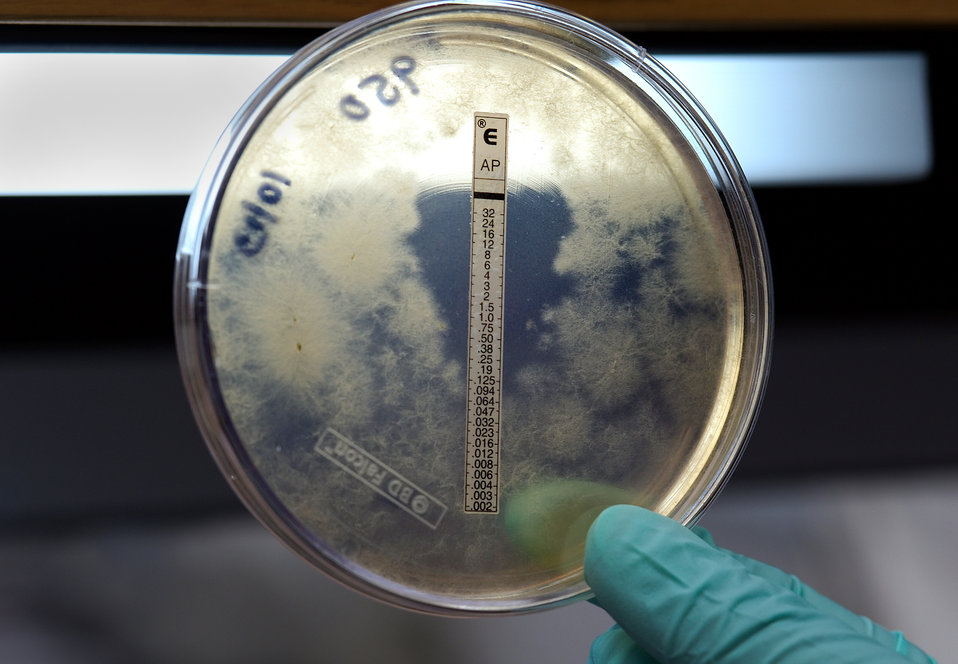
Captured during the Centers for Disease Control and Prevention's (CDC) multistate meningitis outbreak investigation, this plate revealed the results of a susceptibility test to the antifungal drug amphotericin B. The drug inhibited growth of the fungal organism Exserohilum in the clear area where the amphotericin B had diffused into the medium, while the Exserohilum organisms were growing elsewhere on the plate, where the drug had not diffused into the medium.